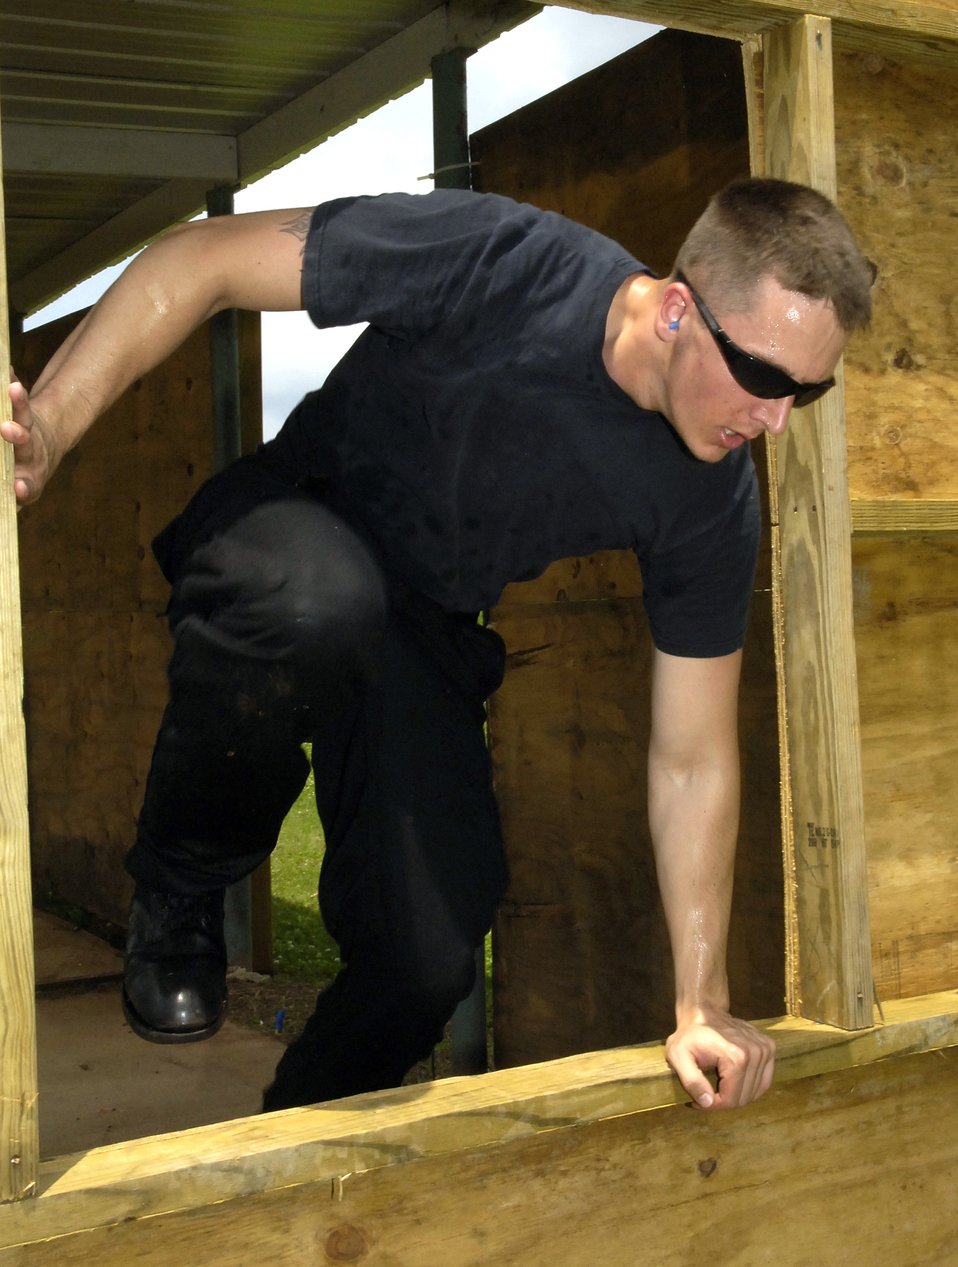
Security forces Airmen at SWAT competition

Senior Airman Jason Vavro jumps through a window during a timed event at the Louisiana State SWAT Team Competition in Alexandria, La., on Tuesday, May 2, 2006. Airman Vavro is with the 2nd Security Force Squadron at Barksdale Air Force Base, La.